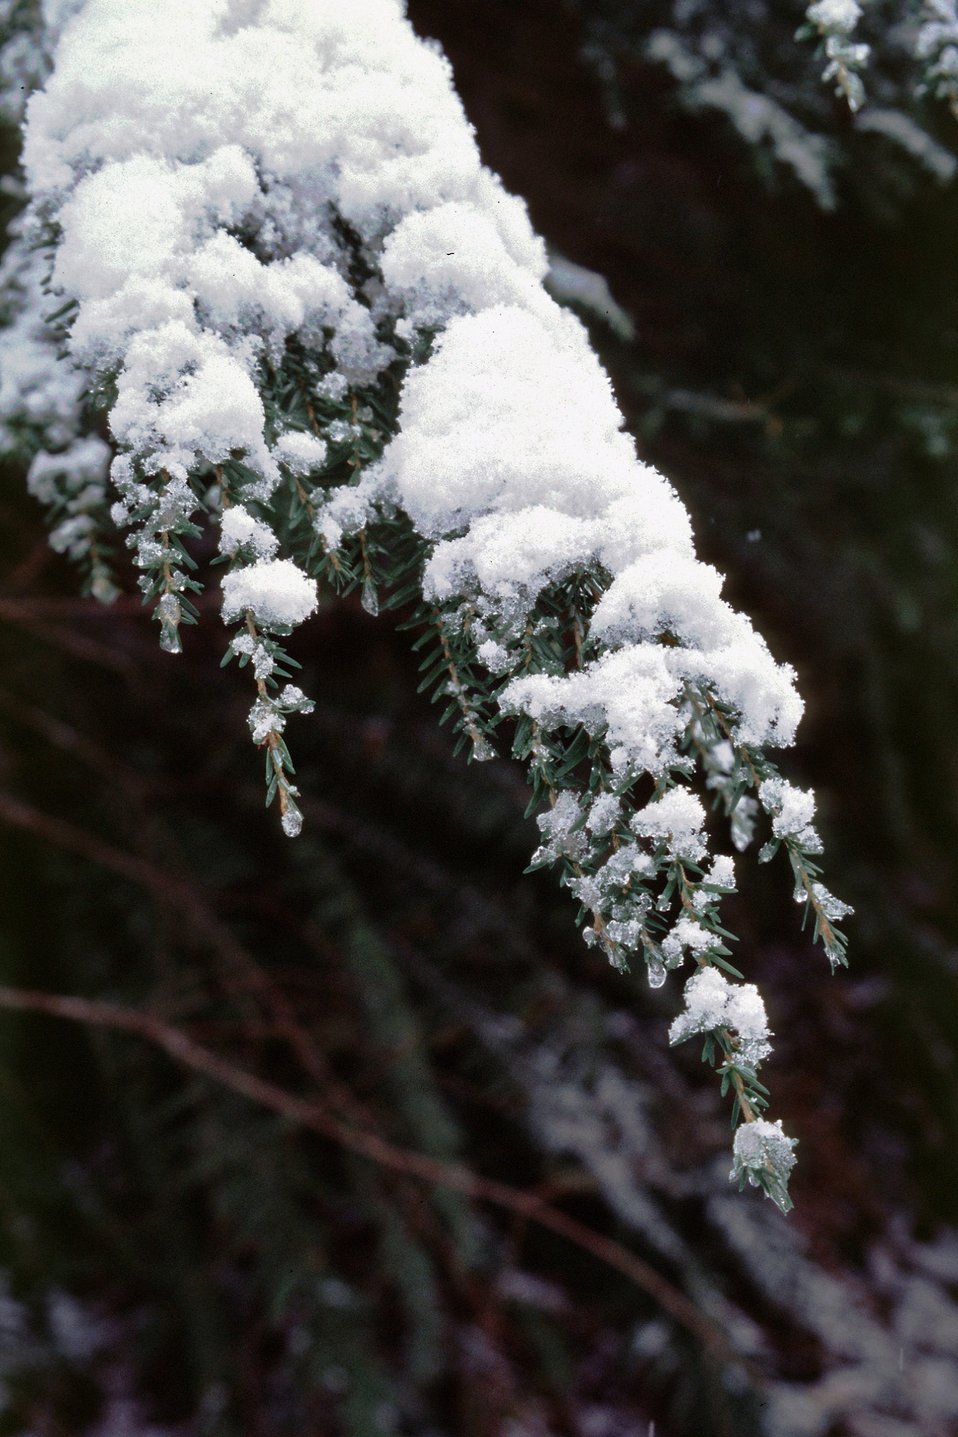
Mid Winter forest scene in the Mollala Corridor.